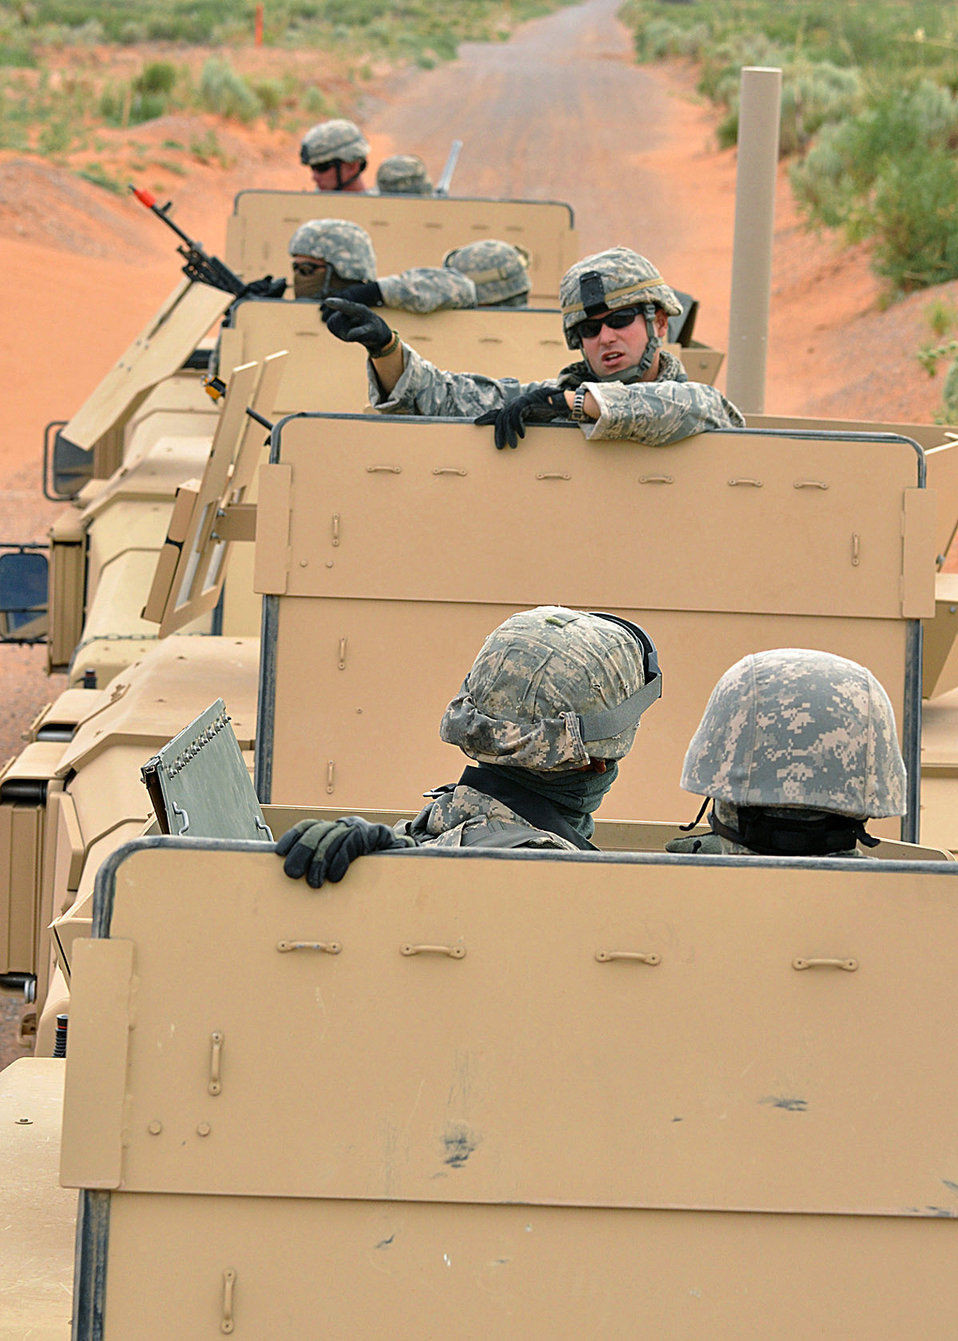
Make your point

Staff Sgt. Ryan Deane talks with security forces Airmen during a convoy live fire exercise June 30, 2010, on a range in New Mexico. Sergeant Deane is assigned as an instructor at the Desert Defender Regional Training Center, which is operated by the Texas Air National Guard's 204th Security Forces Squadron.